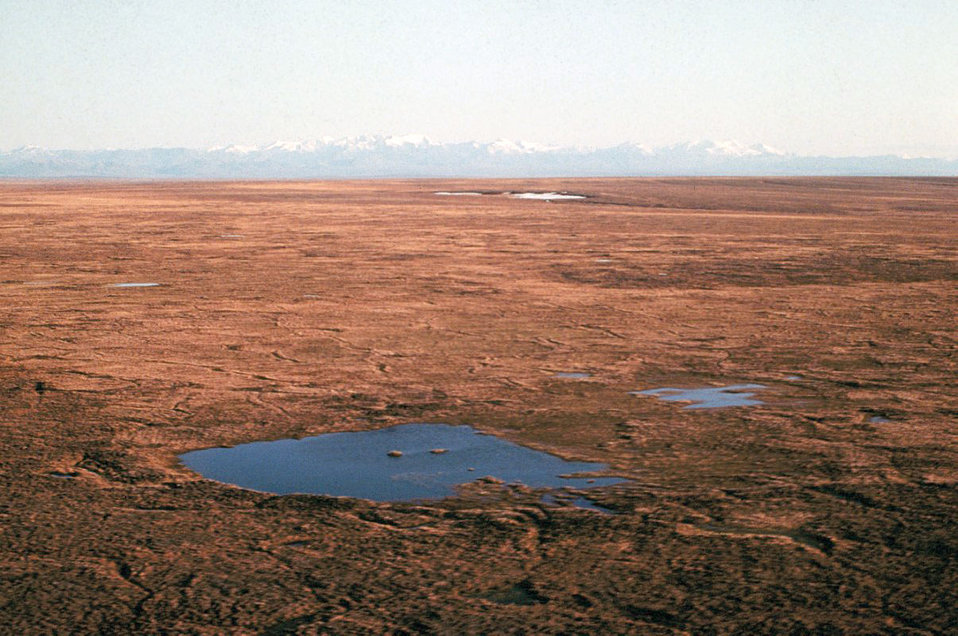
1002 Area: Tundra looking south toward Brooks Range

Arctic National Wildlife Refuge; Brooks Range